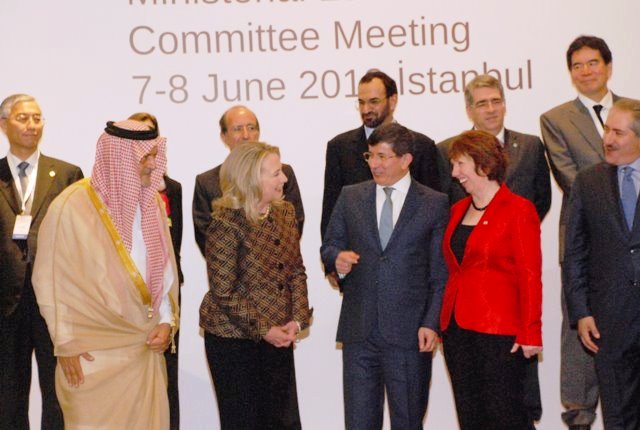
Secretary Clinton Chats With Fellow Leaders

U.S. Secretary of State Hillary Rodham Clinton chats with fellow leaders before taking the family photo at the Global Counterterrorism Forum in Istanbul, Turkey, on June 7, 2012.